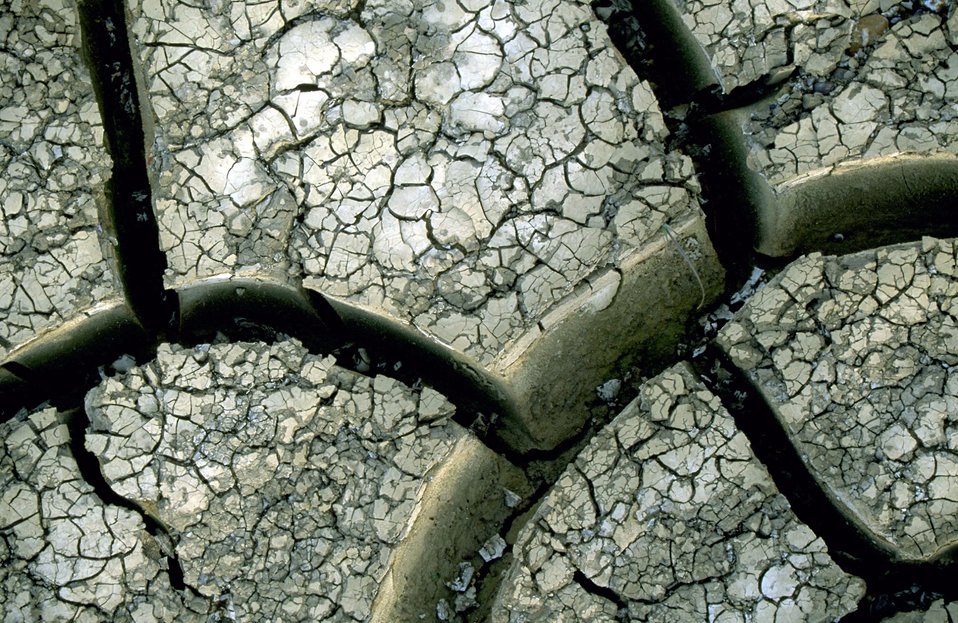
Mud cracks along the banks of the Powder River